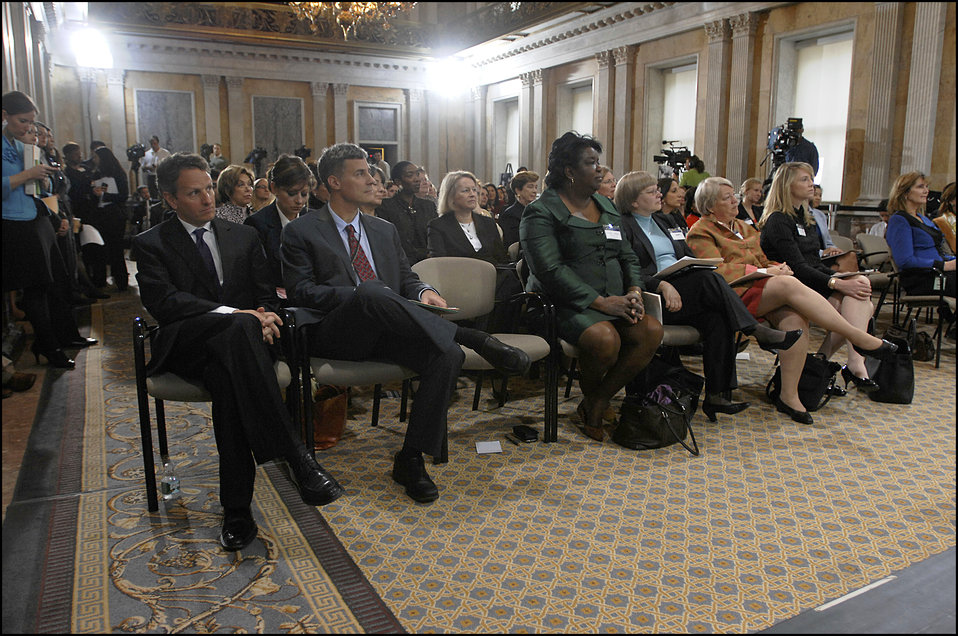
Women in Finance Symposium, 03/29/2010